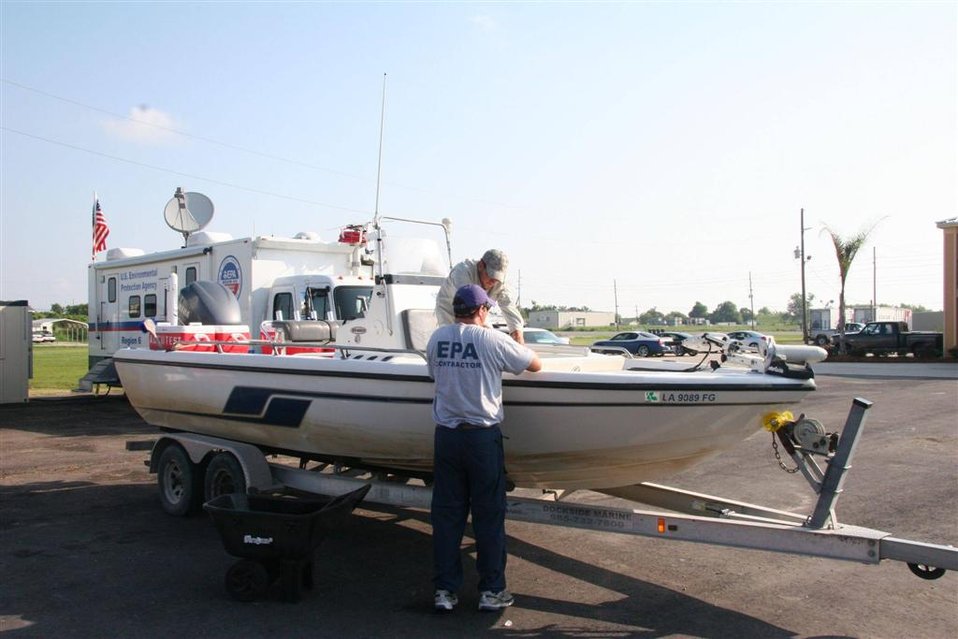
35e5036a-cdad-4429-beb0-91651e93e2c0